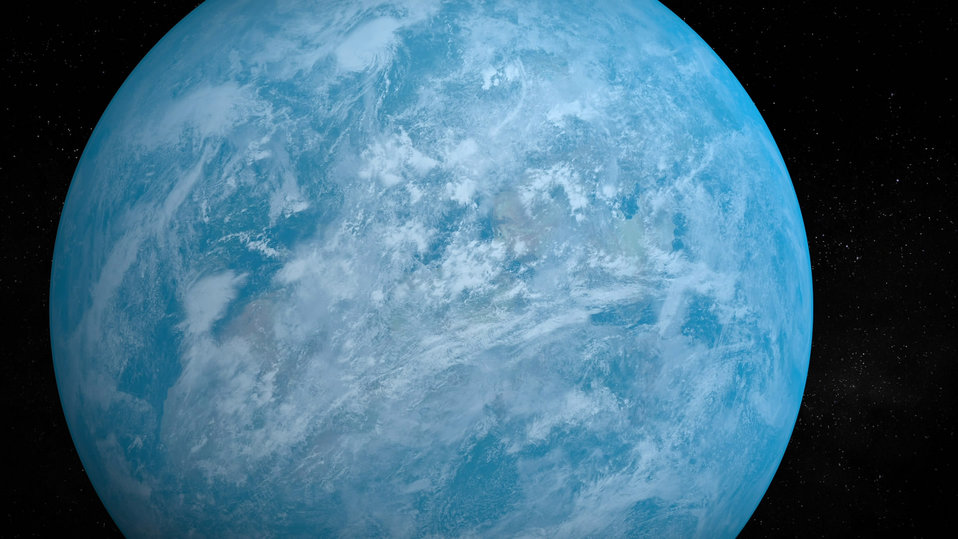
Earth as seen from space

View of the earth from space.